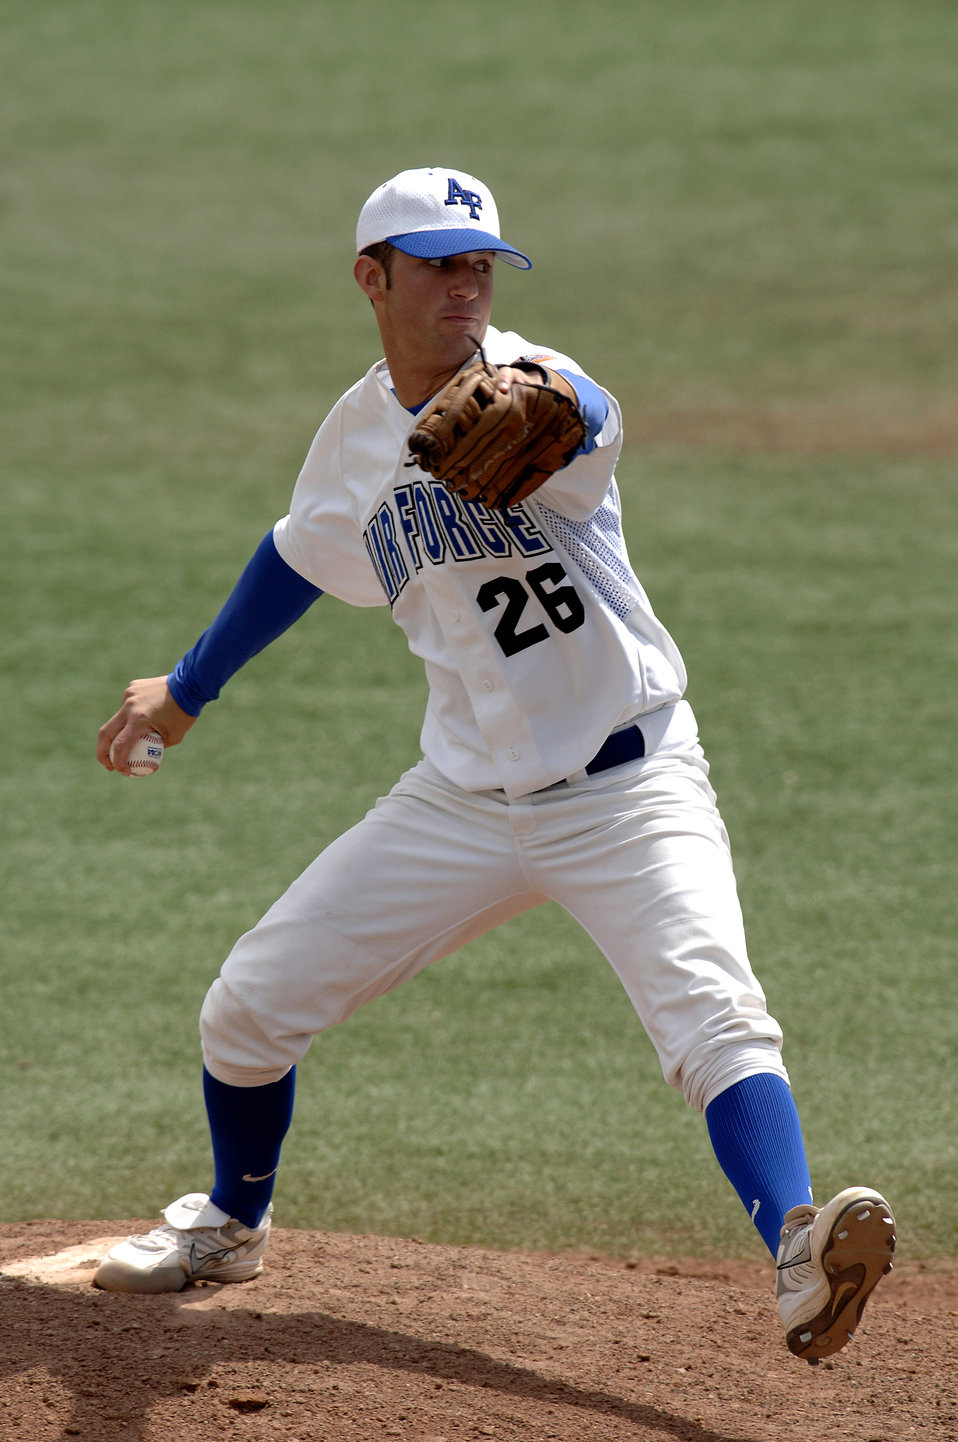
New Mexico sweeps Falcons

Sophomore pitcher Jake Petro works the mound against the New Mexico Lobos in game 3 of the series. Cadet Petro allowed 6 runs in 4 innings of work. New Mexico swept the 3-game series from the Air Force Falcons.